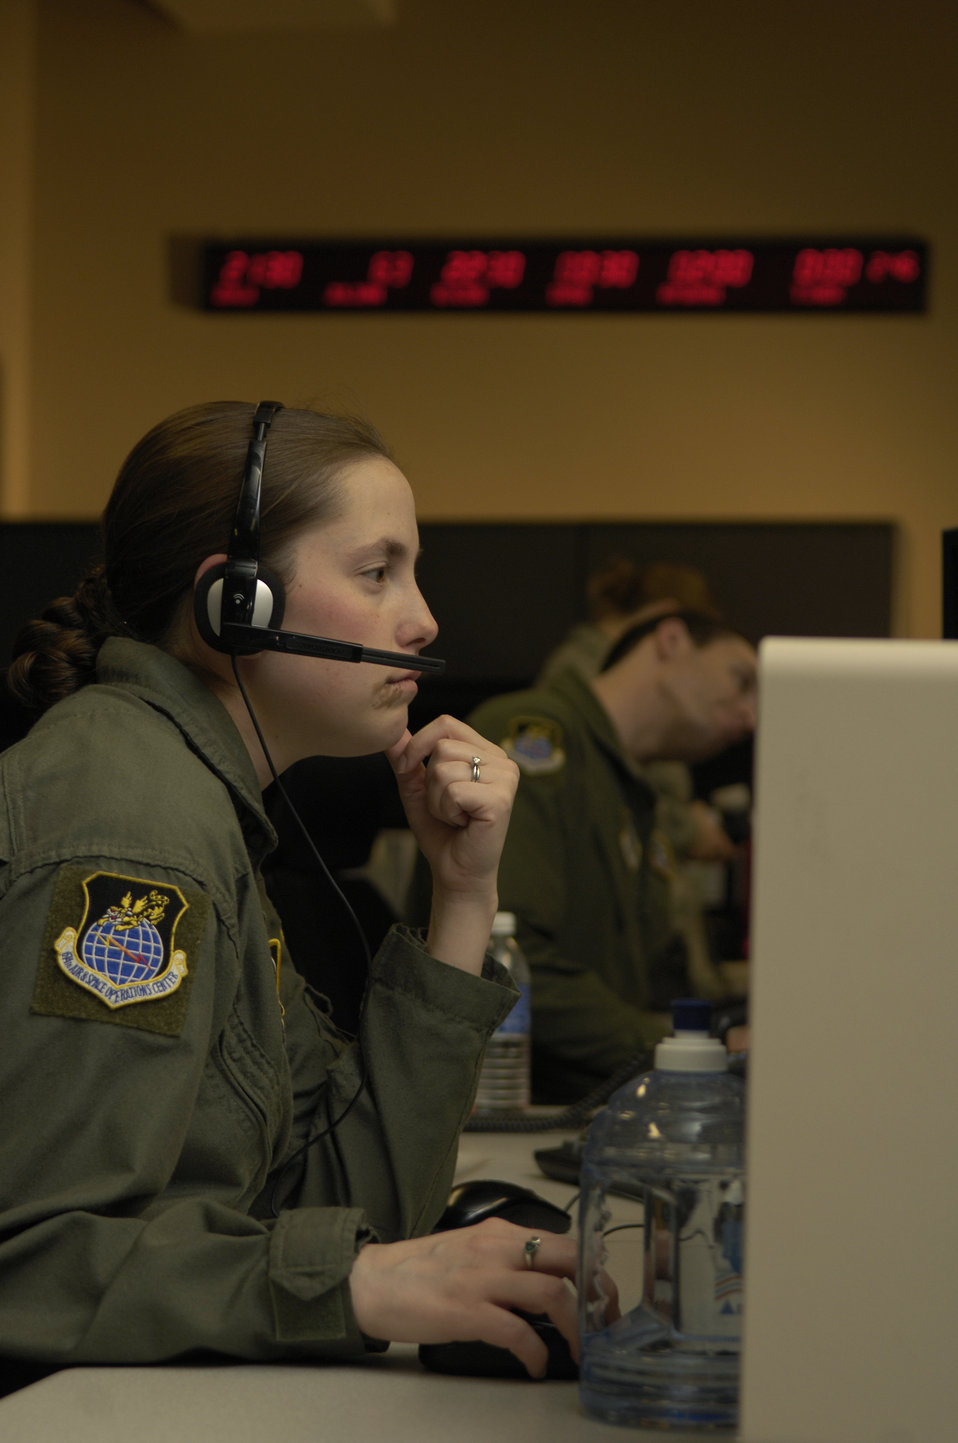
Joint Space Operations Center

Tech. Sgt. Jennifer Hangley, a missile warning duty officer at the Joint Space Operations Center at Vandenberg Air Force Base, Calif., reviews data received from the Delta II site there. The purpose of the JSpOC is to provide a focal point for the operational employment of worldwide joint space forces, and enable the commander of Joint Functional Component Command Space to integrate space power into global military operations.